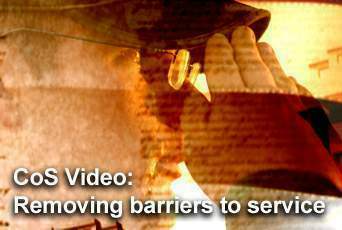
Continuum of Service video

The Continuum of Service video explains this program designed to enable the accession, retention and transitition of members of the Total Force components through integrated Air Force personnel management policies.